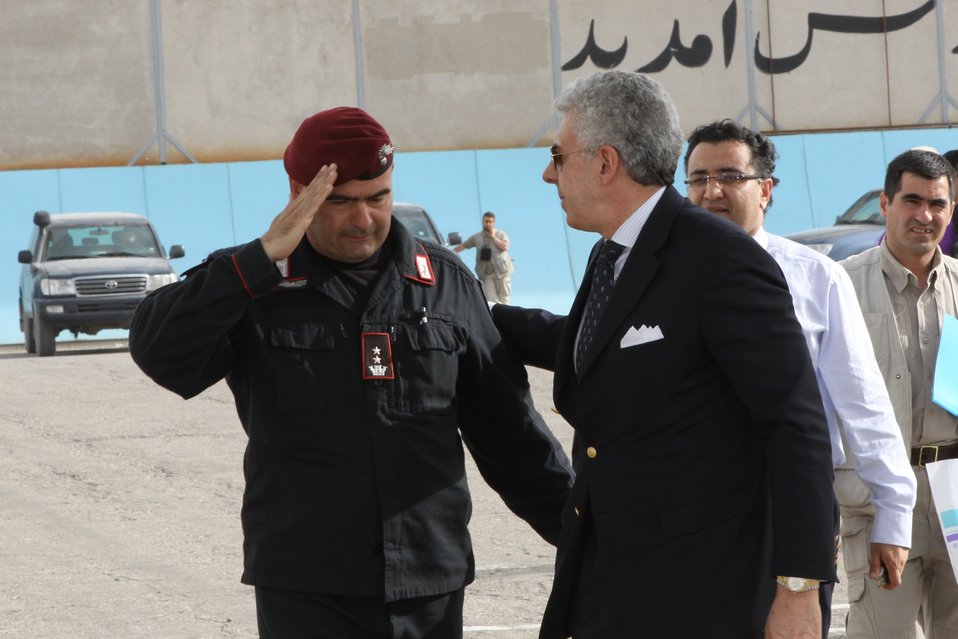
100525 Hirat Marble Conference 892